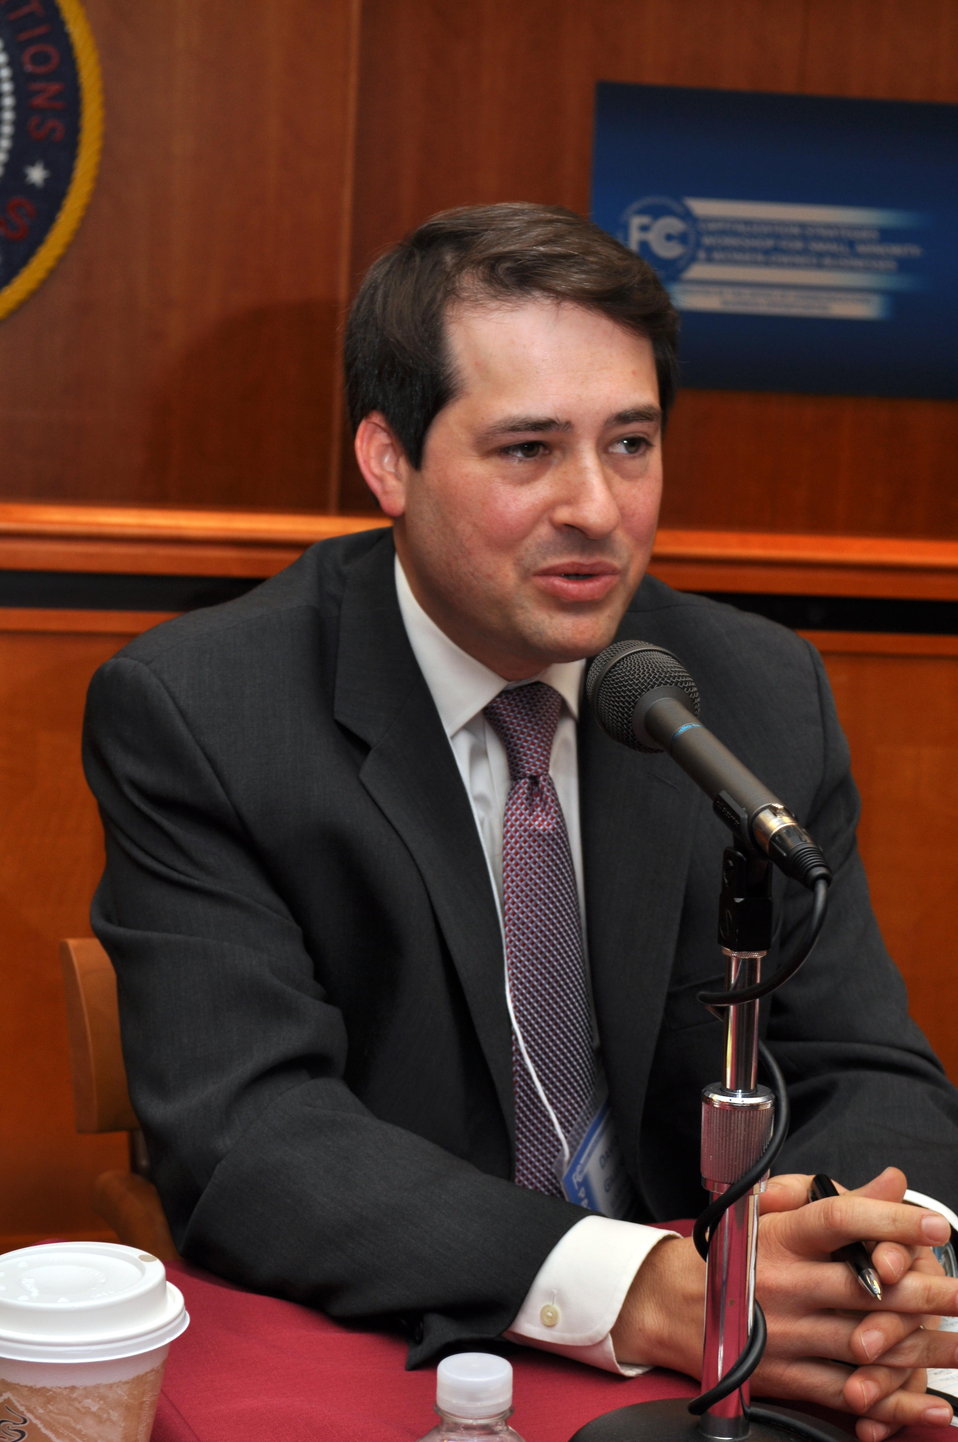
Capitalization Strategies

Workshop for small, minority and women owned businesses. Hosted by the Office of Communications Business Opportunities